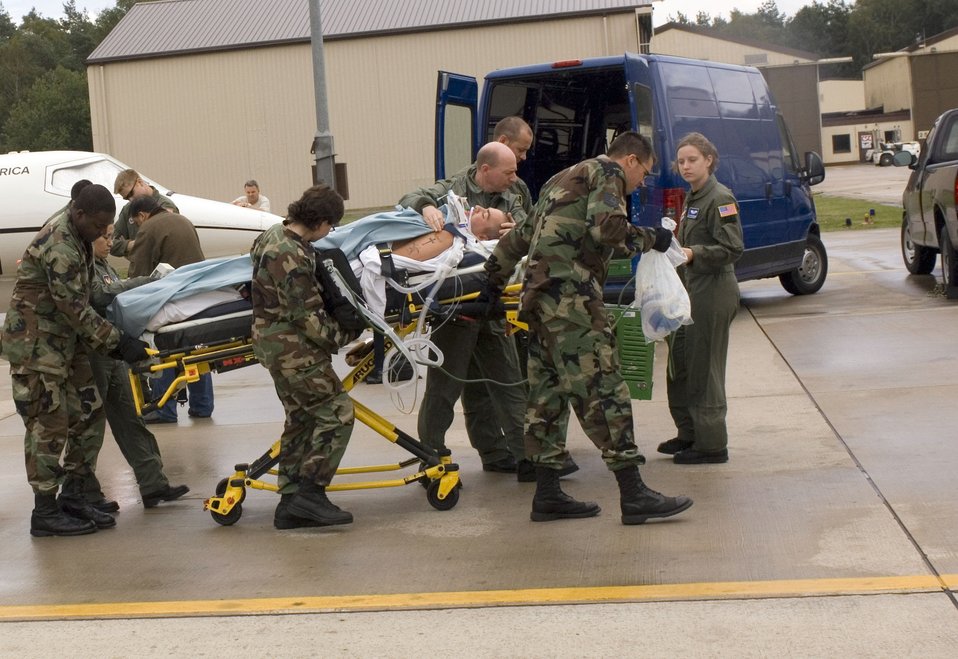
Staging flight sees lull in hectic routine

RAMSTEIN AIR BASE, Germany -- Doctors, nurses and medical technicians rush a critically ill patient to an awaiting ambulance. Airmen with the 435th Contingency Aeromedical Staging Facility here work with medical teams from nearby Landstuhl Regional Medical Center to transport and care for servicemembers in Iraq and Afghanistan. The staging facility team also coordinates the movement of patients to stateside hospitals.